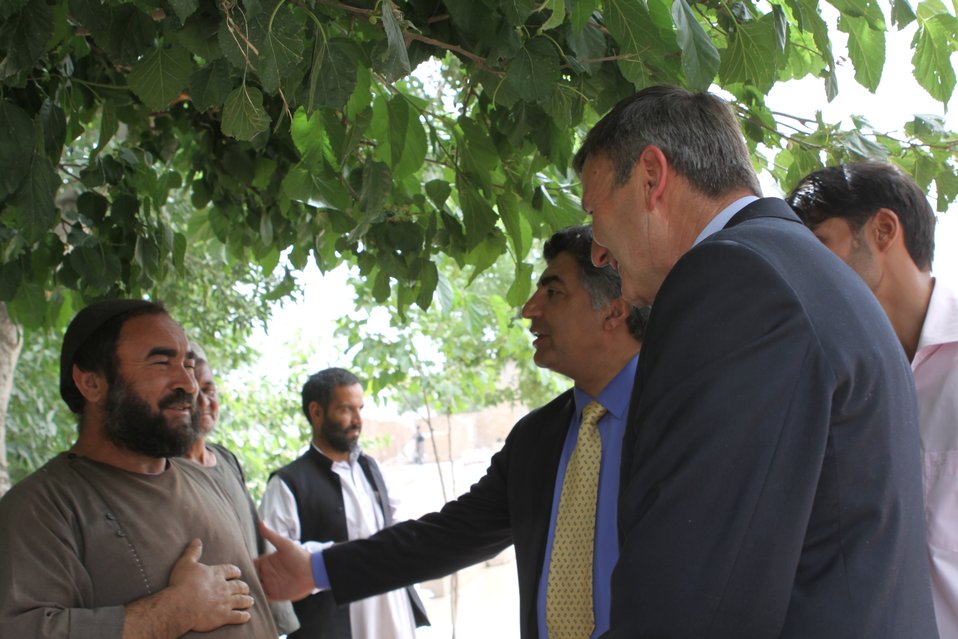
100525 Hirat Marble Conference 652